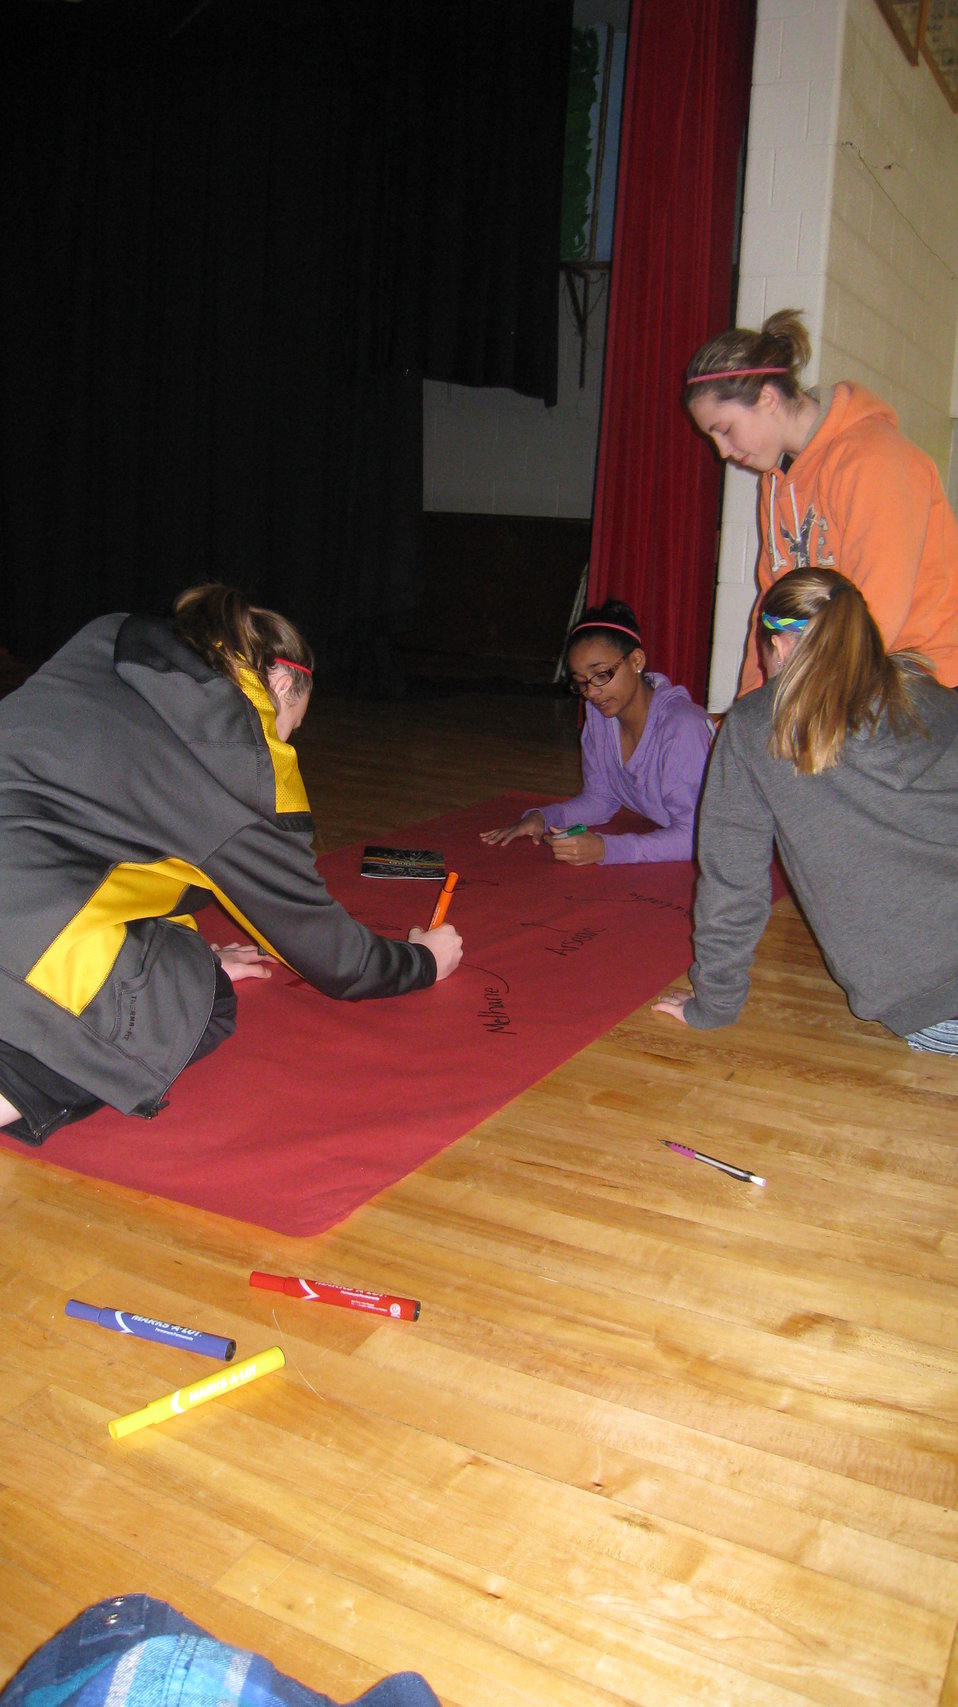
Getting the Word Out

Teenagers from the Van Buren County SAFE Coalition's, Youth Leadership Council (YLC) in Keosauqua, Iowa participate in various events during National Drug Facts Week, 2014.